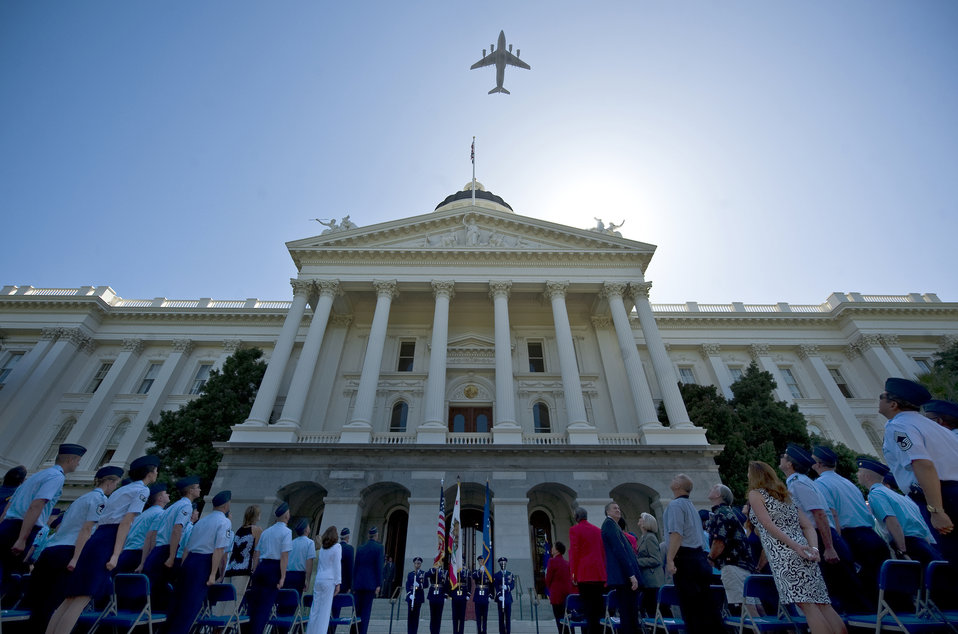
Air Force Week-Sacramento

A C-17 Globemaster III from Travis Air Force Base, Calif., performs a fly-over during a proclamation ceremony at the California State Capitol Building, Sept. 8. The ceremony named Sept. 8 to 13 as Air Force Week Sacramento, an event designed to educate the local community about the Air Force's capabilities and missions through a variety of exhibitions, forums and performances by its premiere entertainment groups.